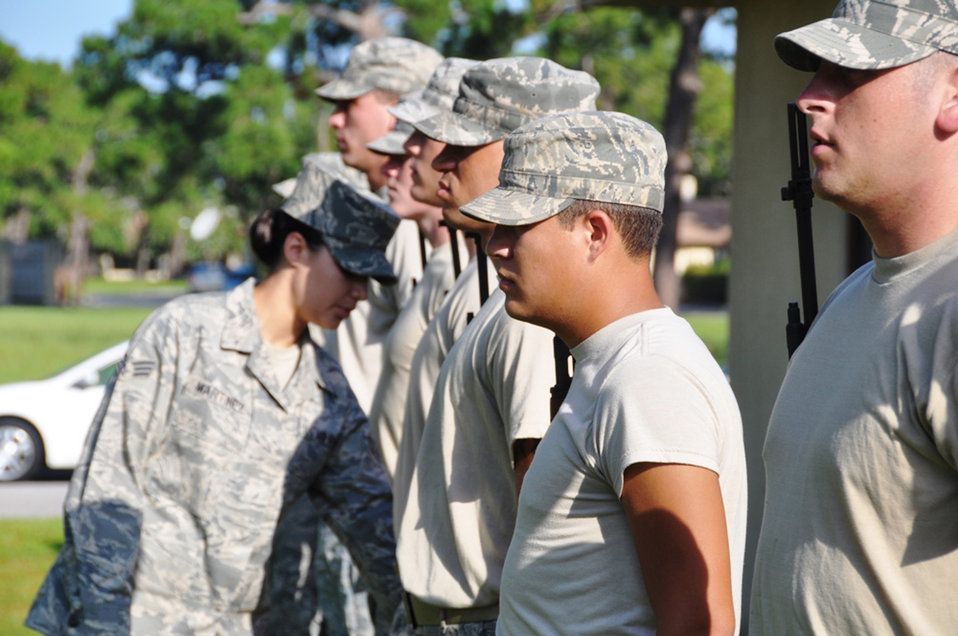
USAF Honor Guard visits Tyndall AFB

Senior Airman Krystie Martinez a visiting United States Air Force Honor Guard instructor, instructs Tyndall honor guard Airmen on proper rifle handling techniques for active duty funeral ceremonies. Airmen underwent a week-long training course to improve their skill and give them the ability to teach others.